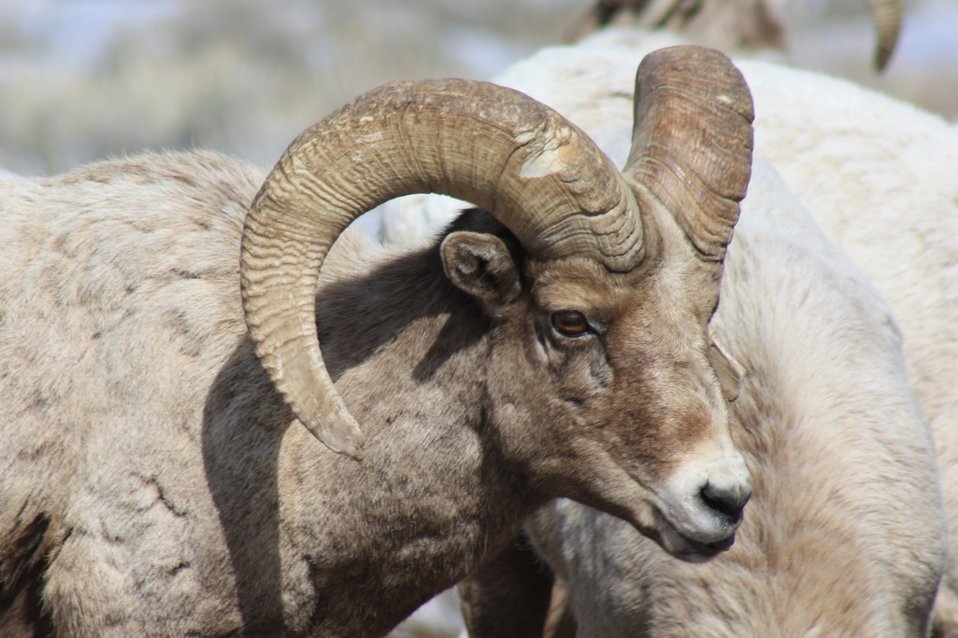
Bighorn Sheep Horns

Bighorn males, called rams, are well known for their large, curled horns. Their horns are used for fighting in order to display dominance or mating rights.

Credit: USFWS / Ann Hough, National Elk Refuge volunteer